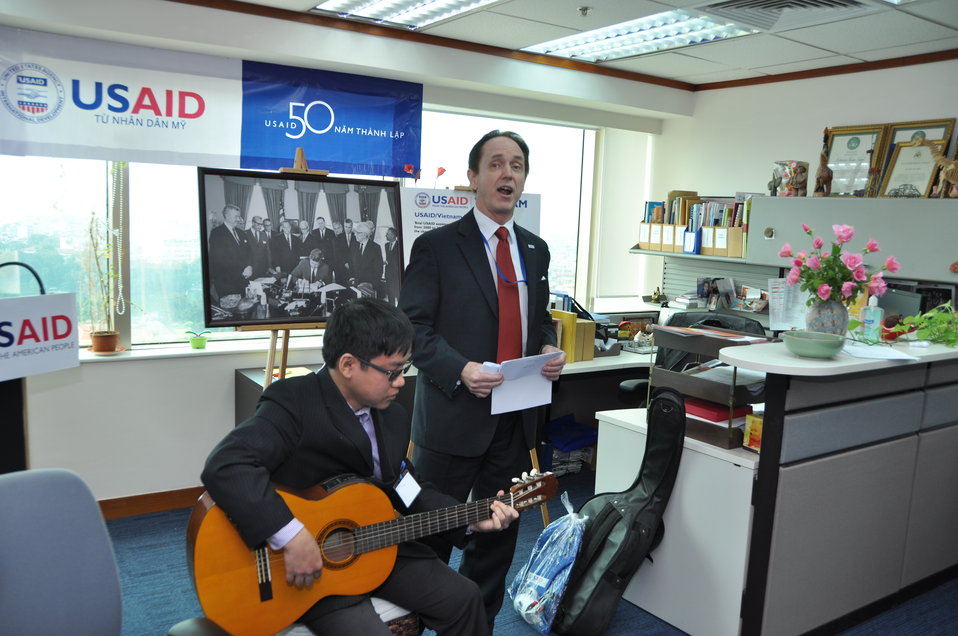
USAID Vietnam Open House, November 3, 2011